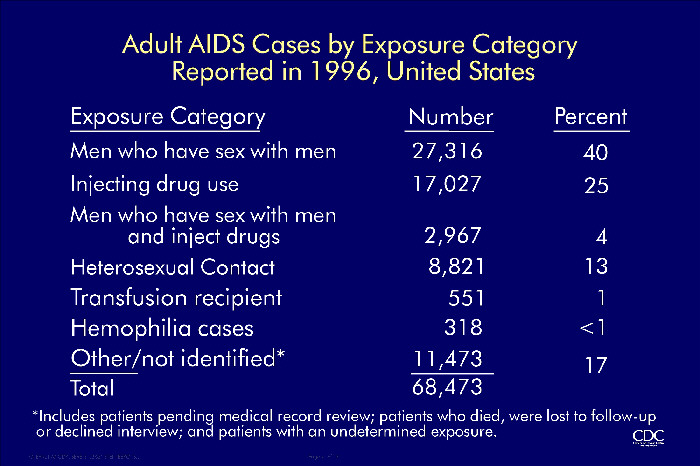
Adult AIDS Cases by Exposure Category Reported in 1996, United States